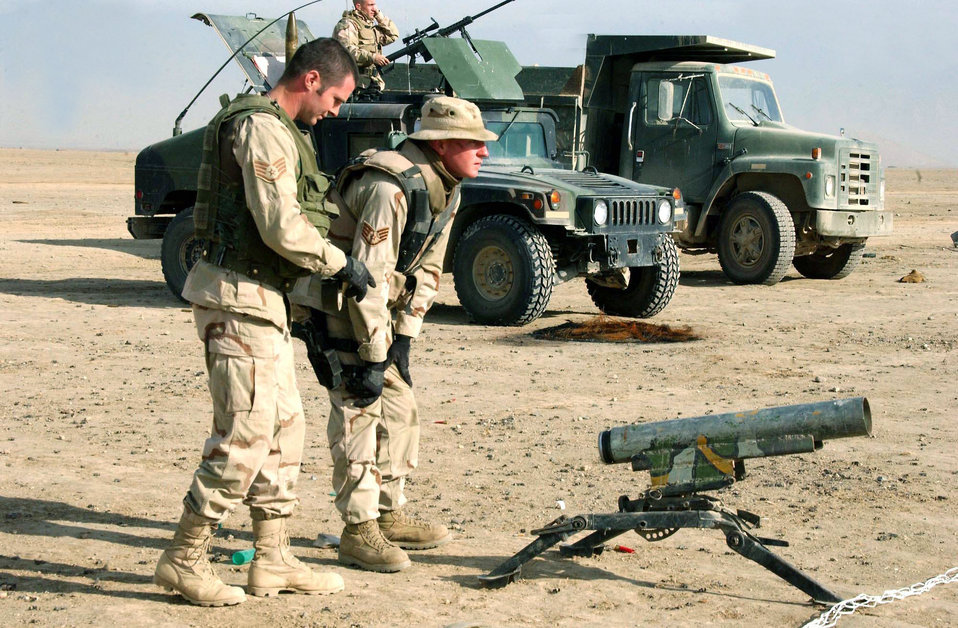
Rocketmen

BAGRAM AIR BASE, Afghanistan -- Staff Sgts. Derek Keener (left) and Scott Ackeret aim a rocket launcher during training at a range here Dec. 2. They are deployed supporting Operation Enduring Freedom.